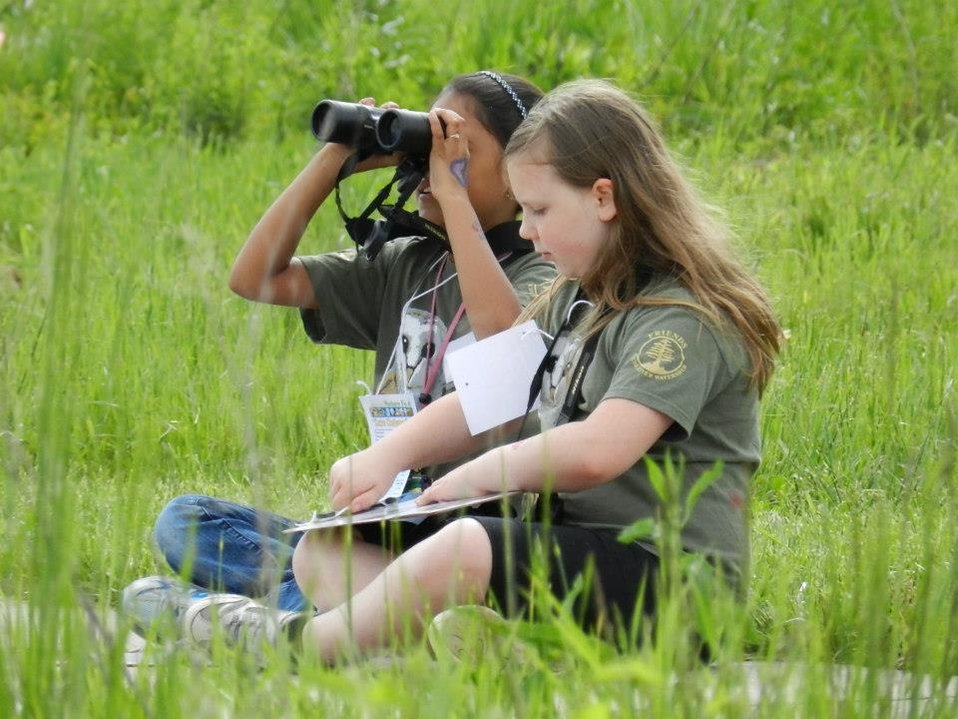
Birding in Cache River watershed